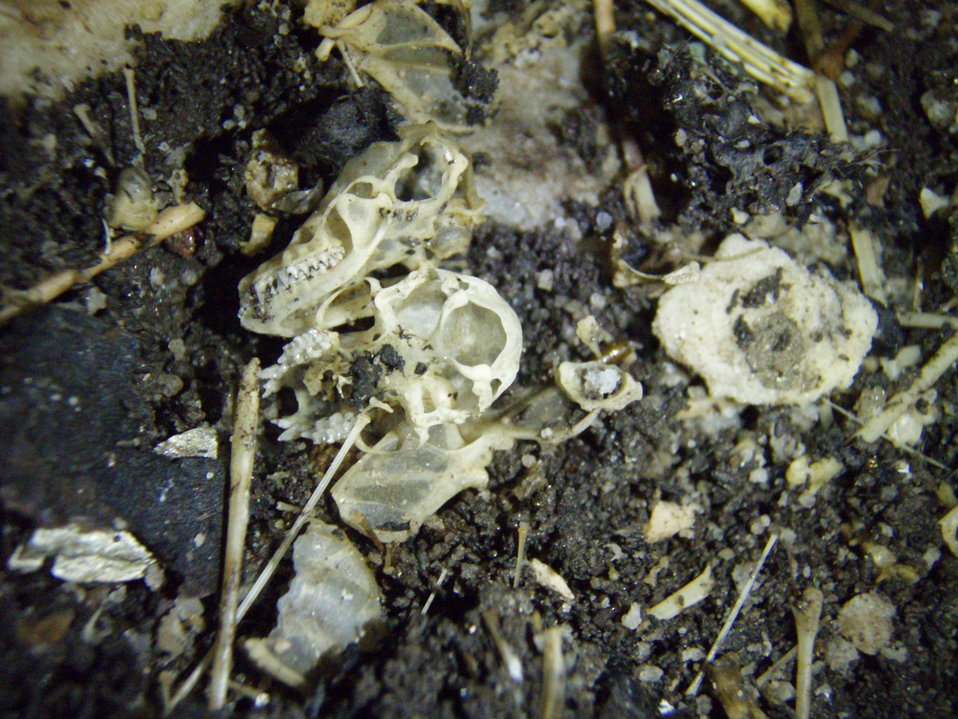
Bat skulls and bones litter the floor of Aeolus Cave, a WNS site in Vermont.